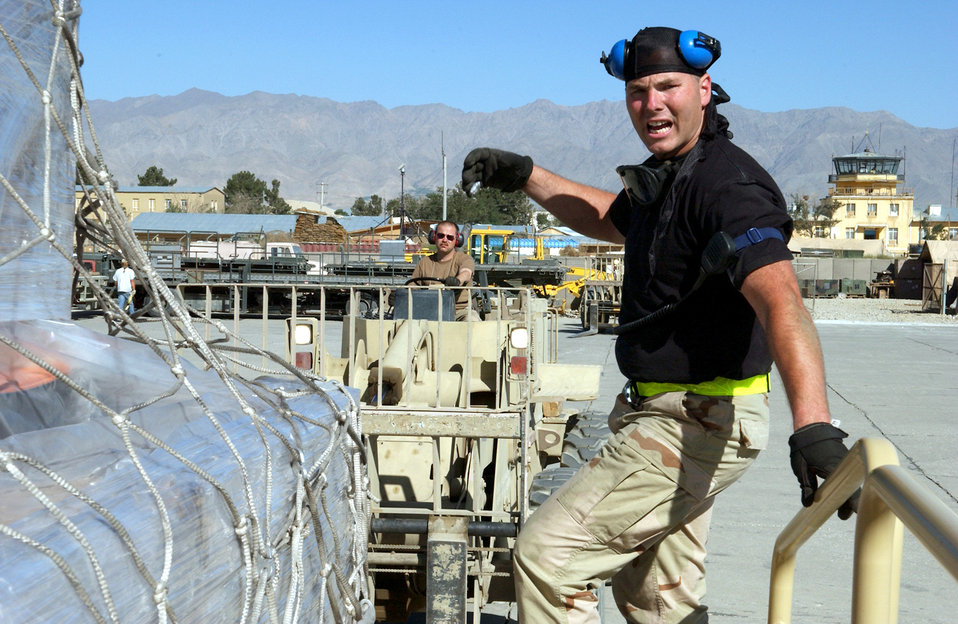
Total-force effort

BAGRAM AIR BASE, Afghanistan -- Senior Airman Mike Byerwalters (right) directs Tech. Sgt. Ray Boyea while unloading cargo from a commercial L-10. The Airmen are assigned to the 455th Expeditionary Logistics Readiness Squadron here and deployed from the 109th Aerial Port Flight at Stratton Air National Guard Base, N.Y.